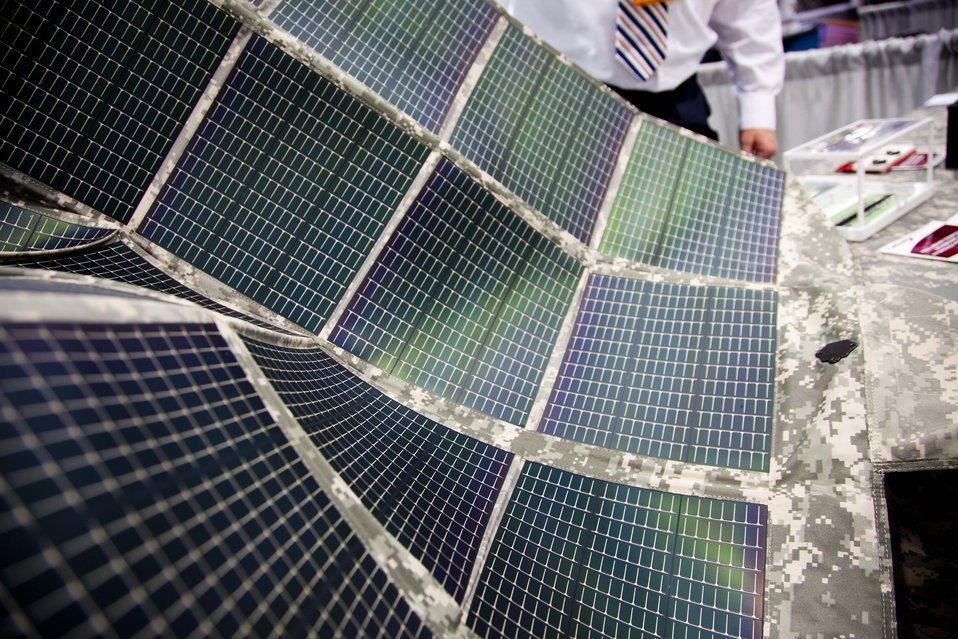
A 60-watt flexible photovoltaic blanket developed by the Army Research Laboratory. The technology not only provides soldiers with shade when tents get hot, it is also a lighter, easily portable way to generate energy to charge essential military equipment.